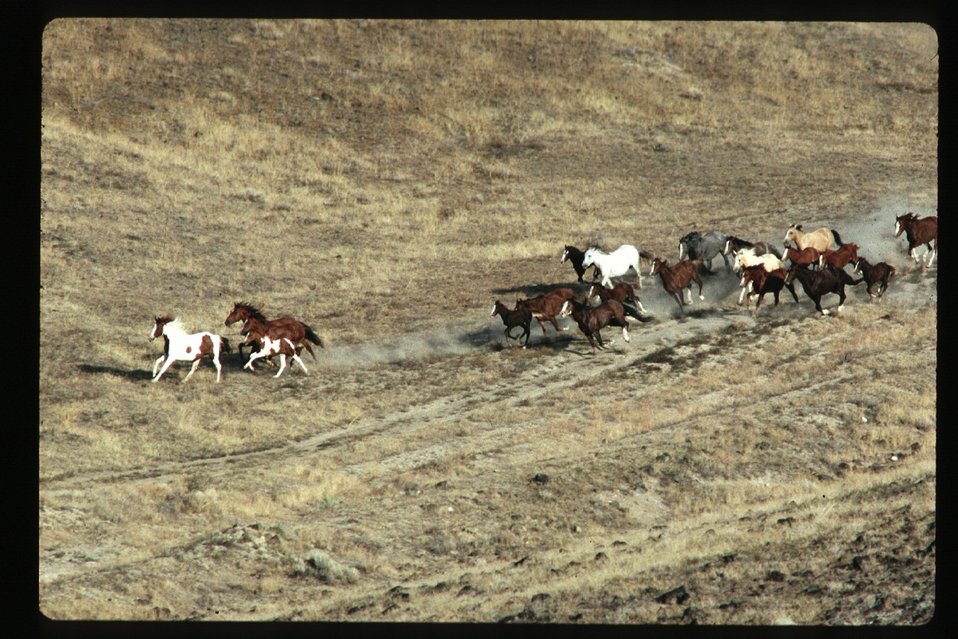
Wild horse roundup Wild Horse and Burro Adoption Program LSRD Lower Snake River District